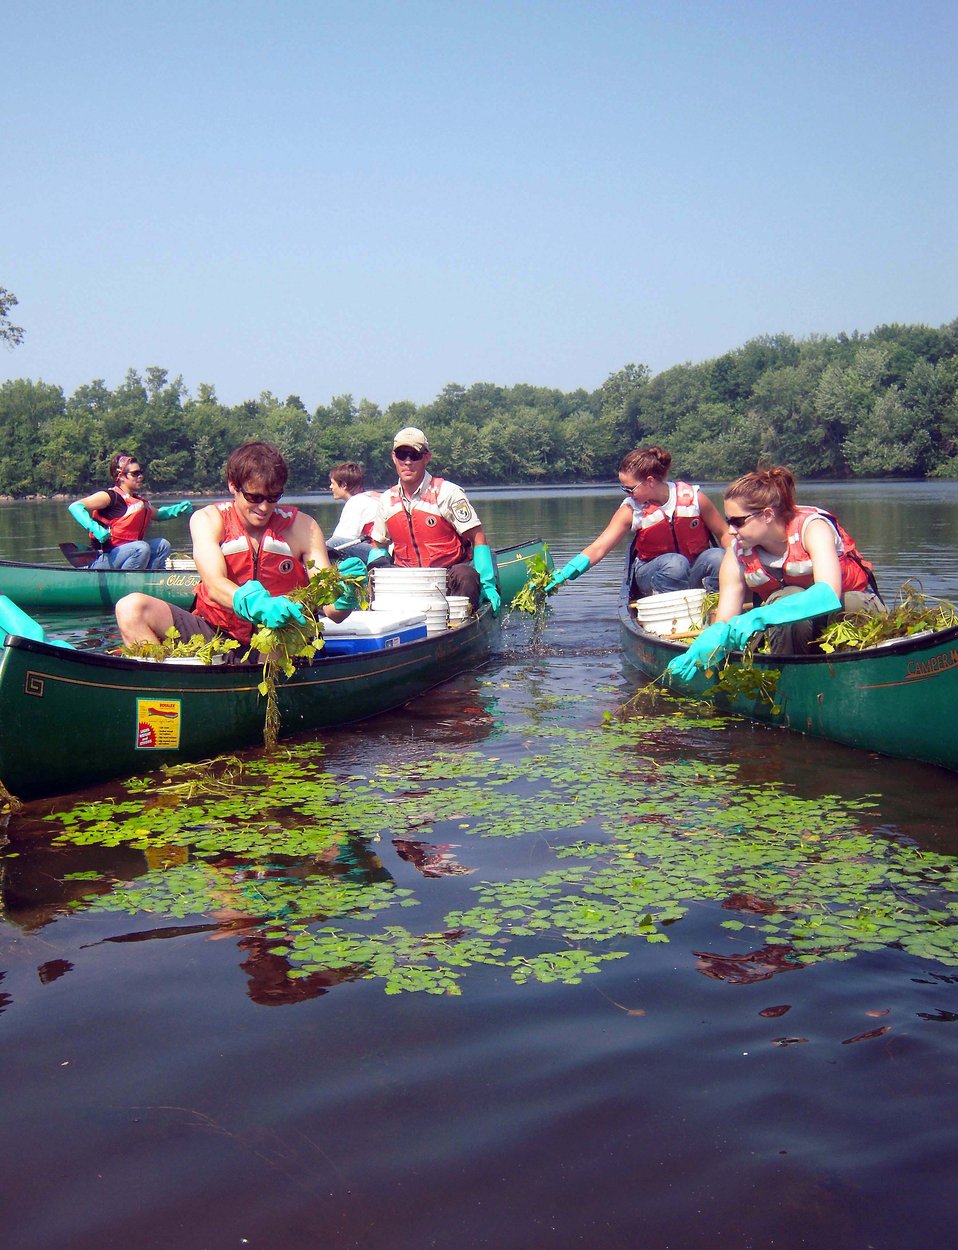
YCC crew removing water chestnut

YCC crew pulling water chestnut.